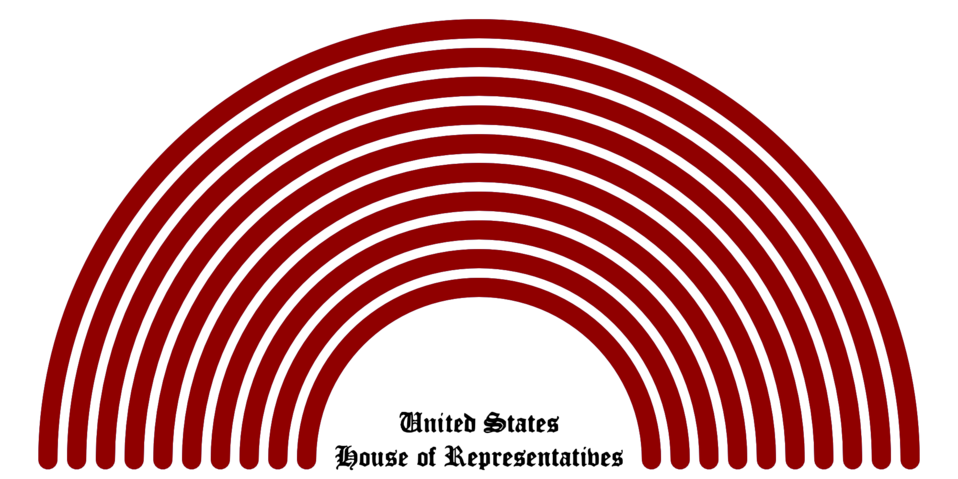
Breakdown of political party representation in the United States House of Representatives during the 111th Congress.
Blue: Democrat
Red: Republican
This SVG file is hand-written. It contains comments suggesting how to amend it to reflect future changes in Congress. Although tools such as Inkscape could read the file, changes can be made more simply with a text editor and checked with a browser.